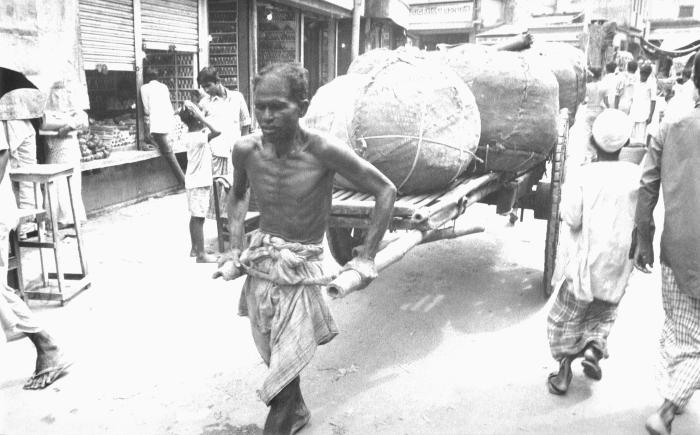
This photograph depicted of a typical Bangladesh street scene. In this instance, a man was carrying sacks of goods by using a pull-cart. This photograph provided by Dr. Stan Foster, and captured by Pierre Claquin, M.D., B.A.C., who at the time was a member of the World Health Organization's Smallpox Eradication Program. It was part of a series photographed by former E.I.S. officer, Stanley O. Foster M.D., M.P.H., and was one of a series entitled 'The Story of One Smallpox Jeep', which depicted the travails faced by the jeep, and its occupants of public health practitioners, as they road through the Bangladesh countryside in an attempt to eradicate smallpox from the country.